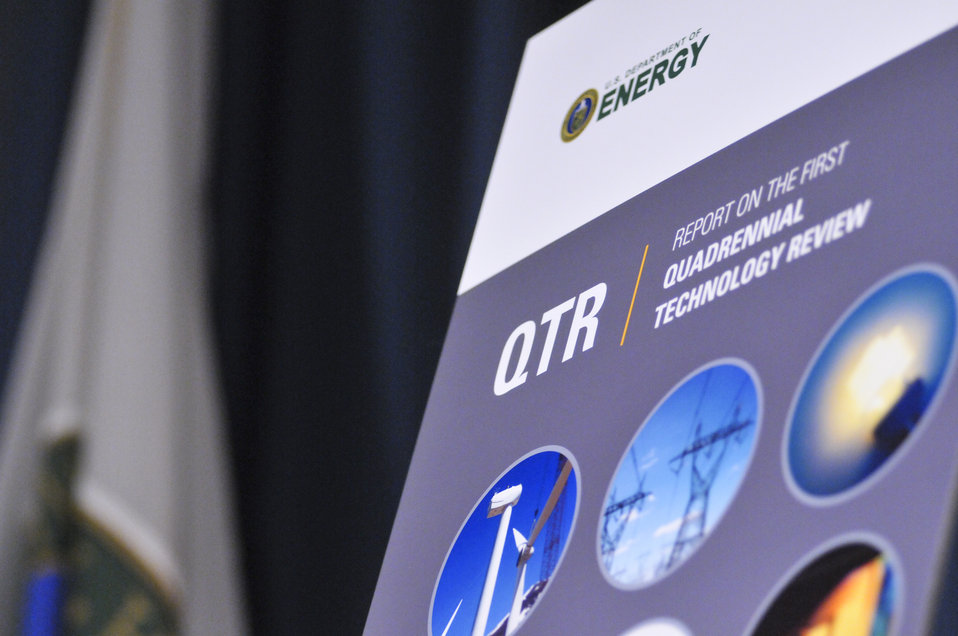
A photo of the cover for the Quadrennial Technology Review.